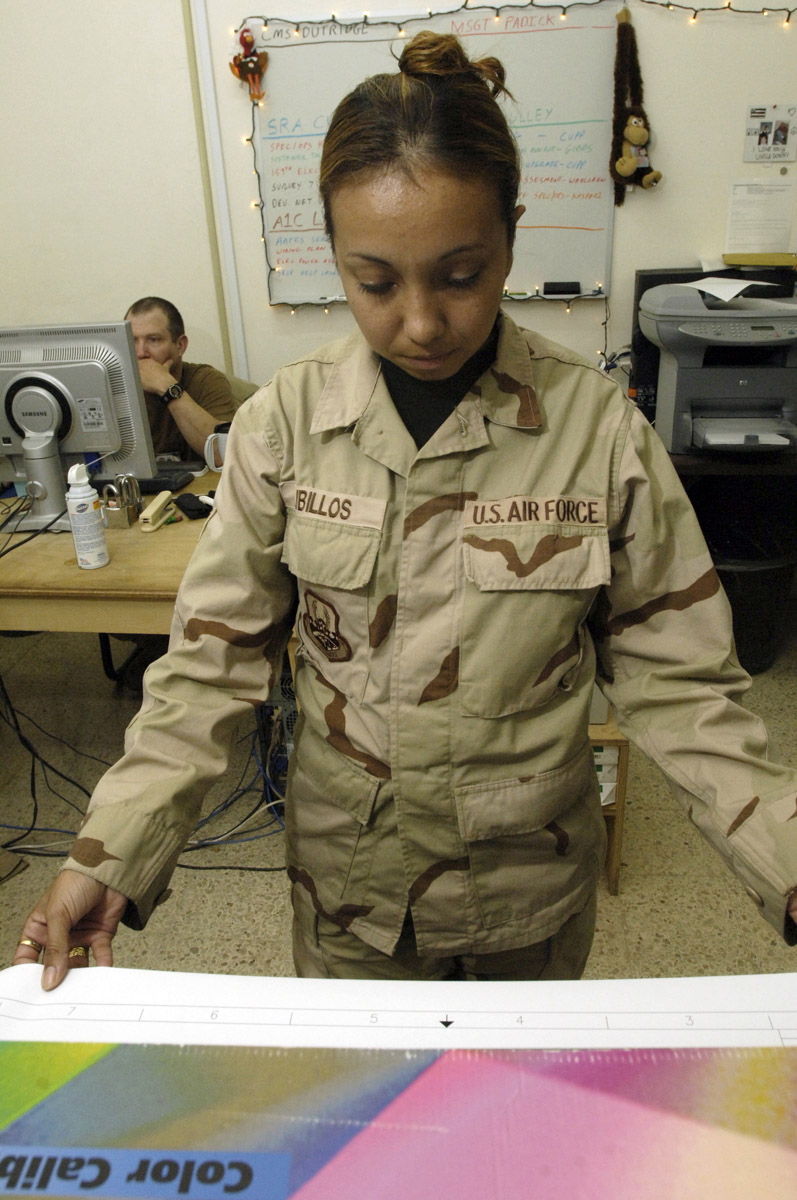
Drawing up plans

BALAD AIR BASE, Iraq (AFPN) -- Senior Airman Angelica Cubillos reviews a map. Airman Cubillos is with the 732nd Expeditionary Civil Engineer Squadron.